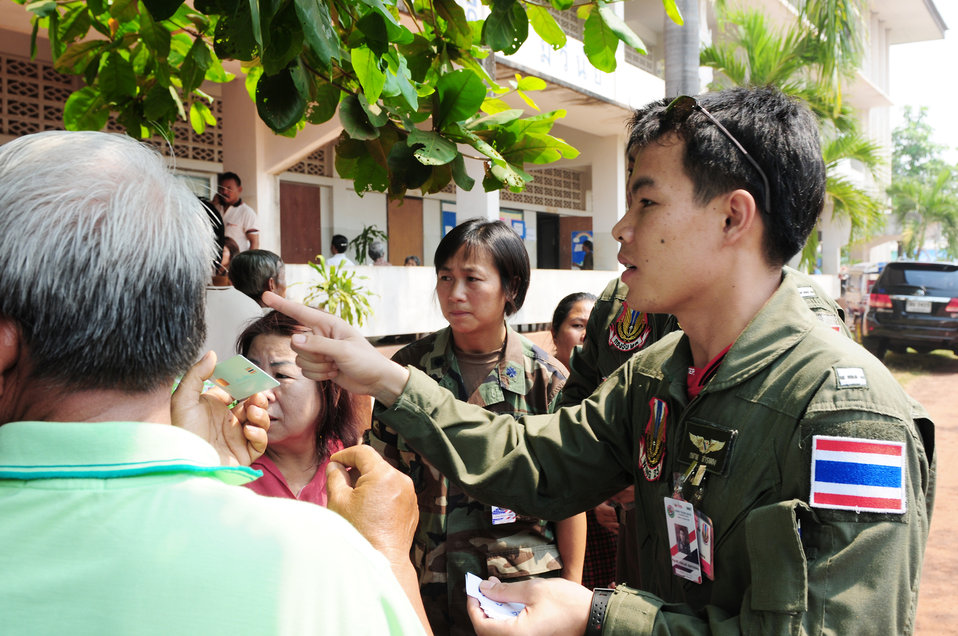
Mulitlateral team helps more than 1,500 Thai residents

Lt. Col. (Dr.) Patricia Ewings and Royal Thai Flight Officer Chalad Santhong distribute patient numbers to the local community waiting to receive care during a Cope Tiger 2010 medical civic assistance project March 9, 2010, in Thailand. Doctor Ewings is a flight surgeon assigned to 13th Air Force at Joint Base Pearl Harbor- Hickam, Hawaii and Flight Officer Santhong is a member of the Royal Thai Air Force.